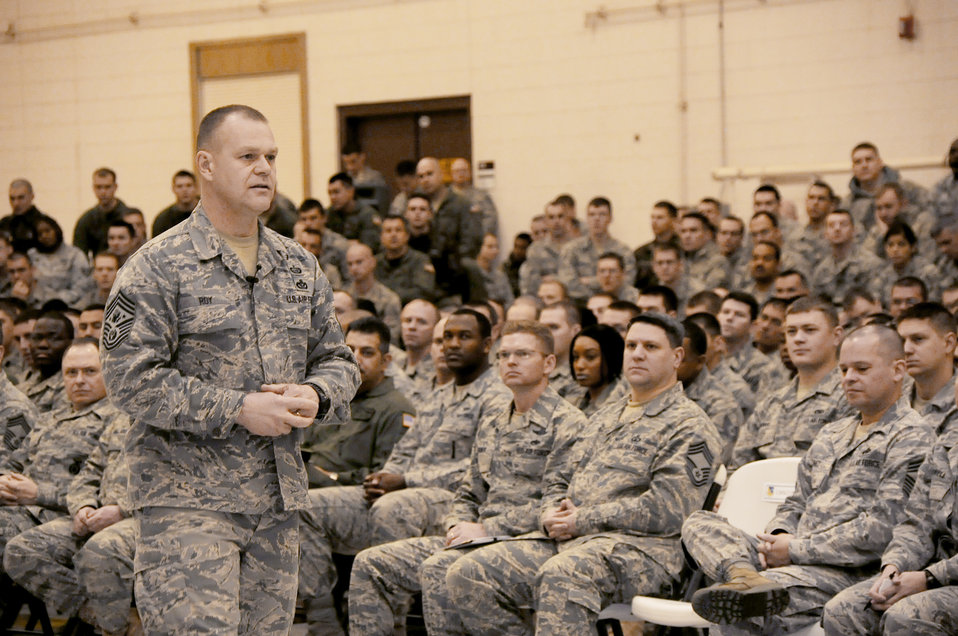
Top enlisted Airman addresses key Cannon issues during visit

Chief Master Sgt. of the Air Force James A. Roy speaks during an Airmen's call Jan. 20, 2010, at Cannon Air Force Base, N.M.